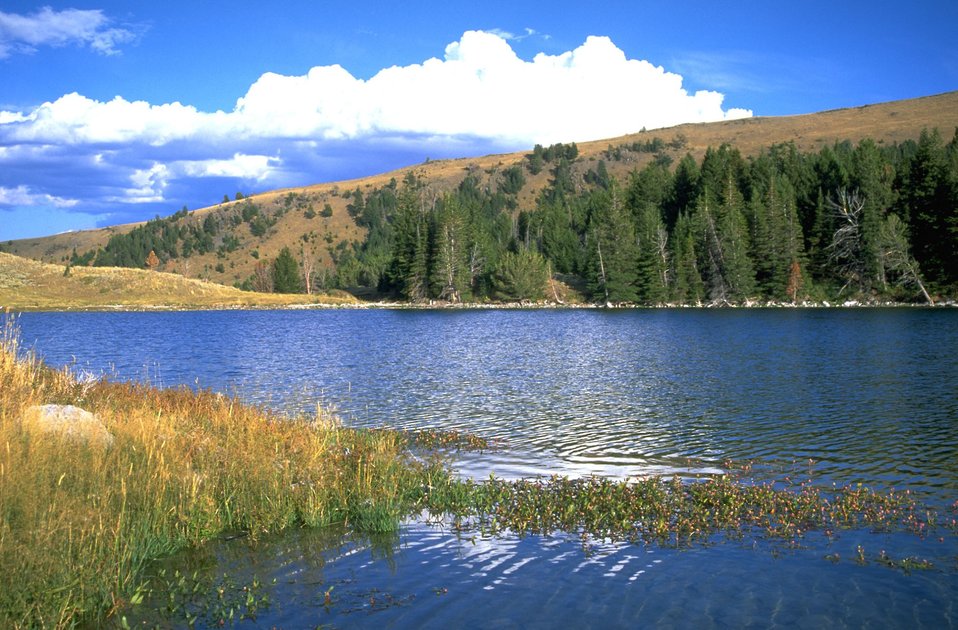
Axolotl Lake near Virginia City